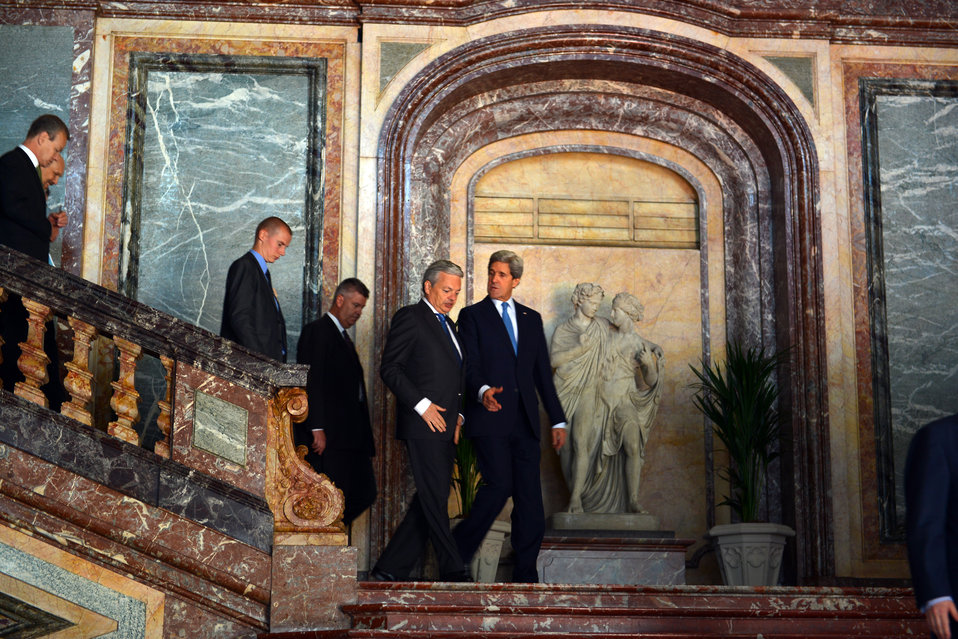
Secretary Kerry Walks With Belgian Foreign Minister Reynders

U.S. Secretary of State John Kerry walks with Belgian Foreign Minister Didier Reynders at Egmont Palace in Brussels, Belgium, on April 24, 2013.